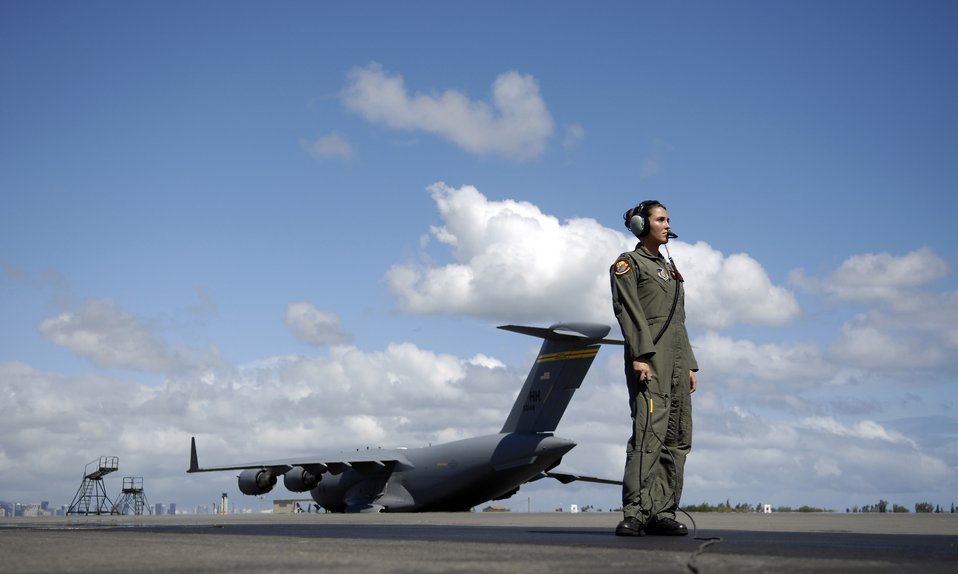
Airlift training

Capt. Stephanie Boff conducts engine start checks on a C-17 Globemaster III before taking off on a training mission July 16 from Hickam Air Force Base, Hawaii. Captain Boff is a pilot with the 535th Airlift Squadron.